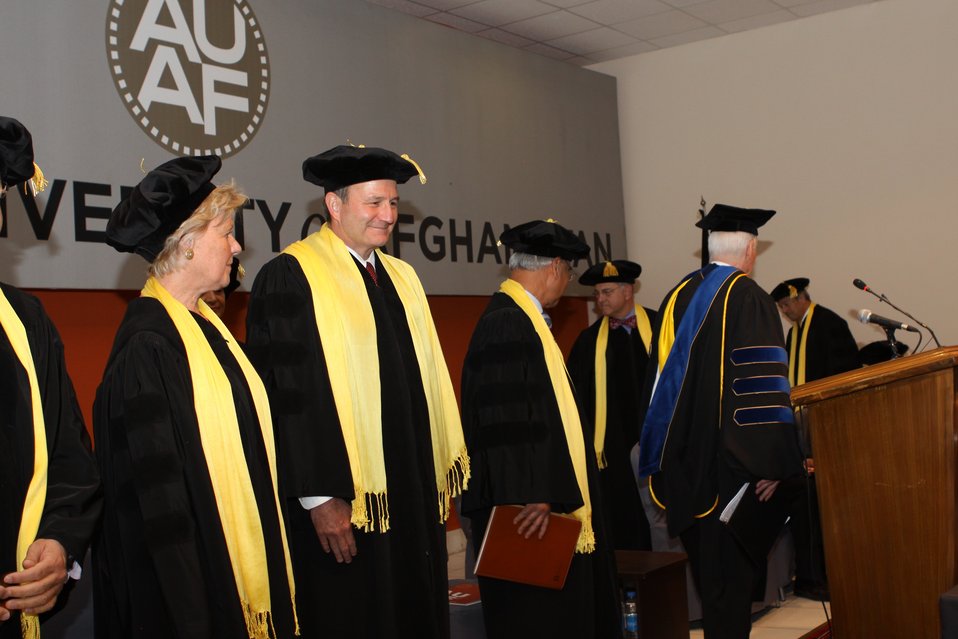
100526 AUAF Graduation 119